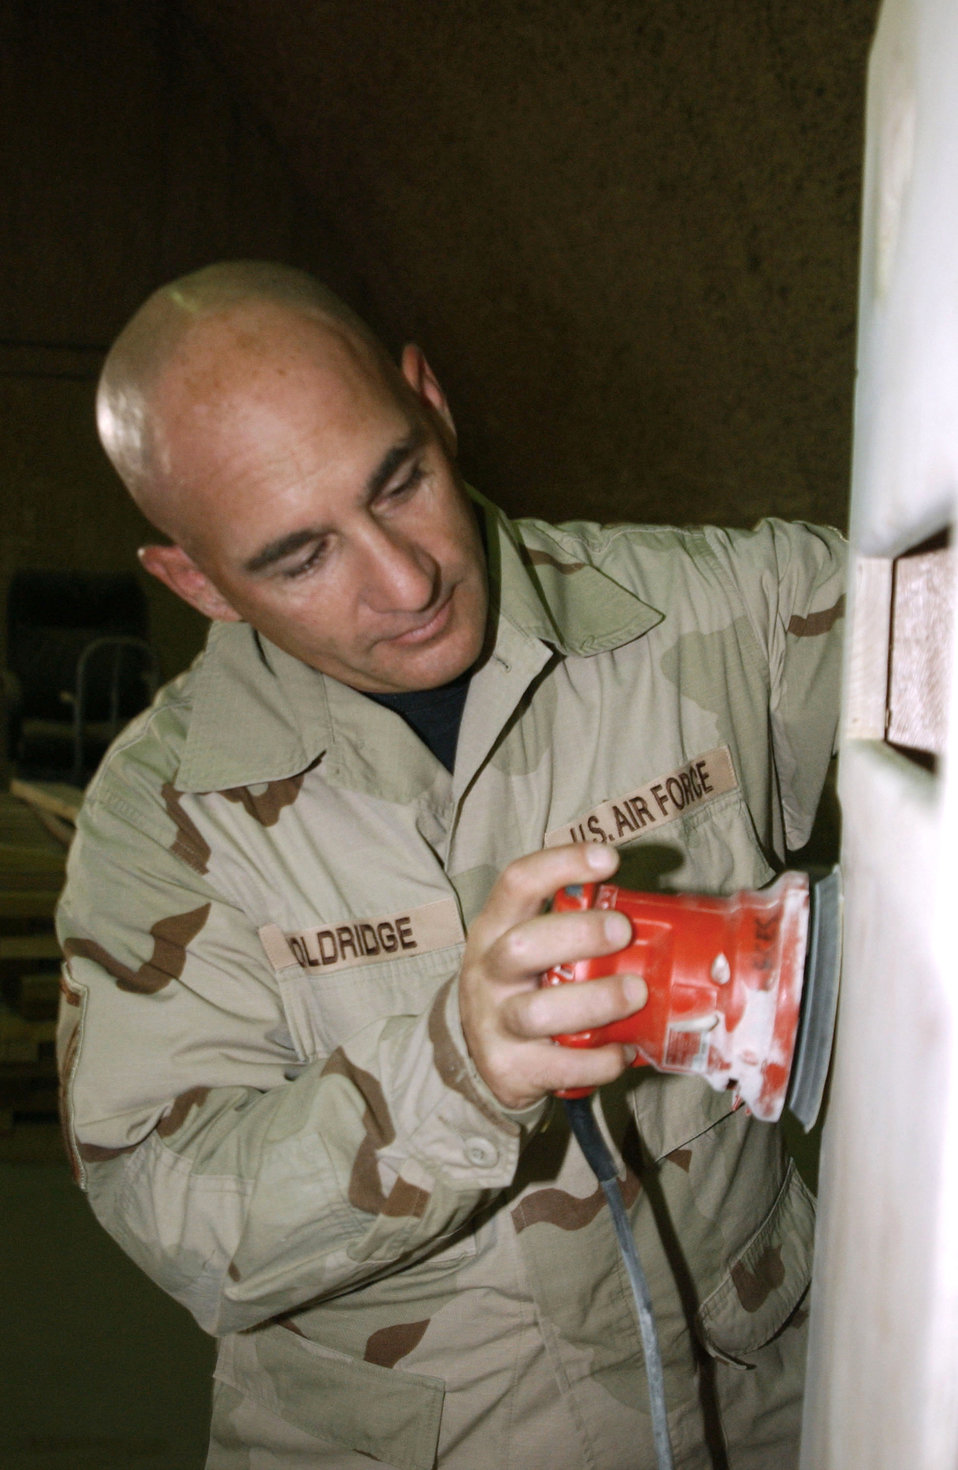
Structures team makes it happen at Balad

Master Sgt. Dan Holdridge, 332nd Expeditionary Civil Engineer Squadron structures noncommissioned officer in charge sands a projector box for the recreation center's movie theater here Oct. 2. Sergeant Holdridge is deployed from Kadena Air Base, Japan.